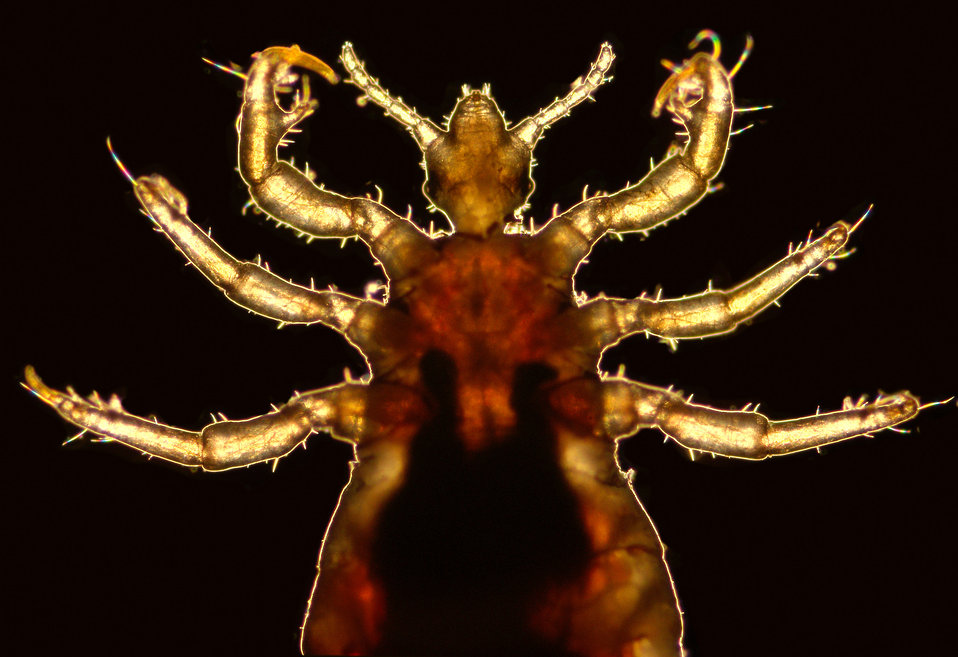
This 2006 photograph depicted a magnified ventral view of a male body louse, Pediculus humanus var. corporis, focusing on the insects cephalic and thoracic regions. Its counterpart, the dorsal view may be seen in PHIL# 9217. Some of the external morphologic features displayed by members of the genus Pediculus include an elongated abdominal region without any processes, and three pairs of legs, all equal in length and width. The distal tip of the male's abdomen is rounded, whereas, the female's (PHIL# 9202) is concave.Body lice are parasitic insects that live on the body, and in the clothing or bedding of infested humans. Infestation is common, found worldwide, and affects people of all races. The dark mass inside the abdomen is a previously ingested blood meal, obtained by the louse when the photographer offered his arm to the insect on which it fed.